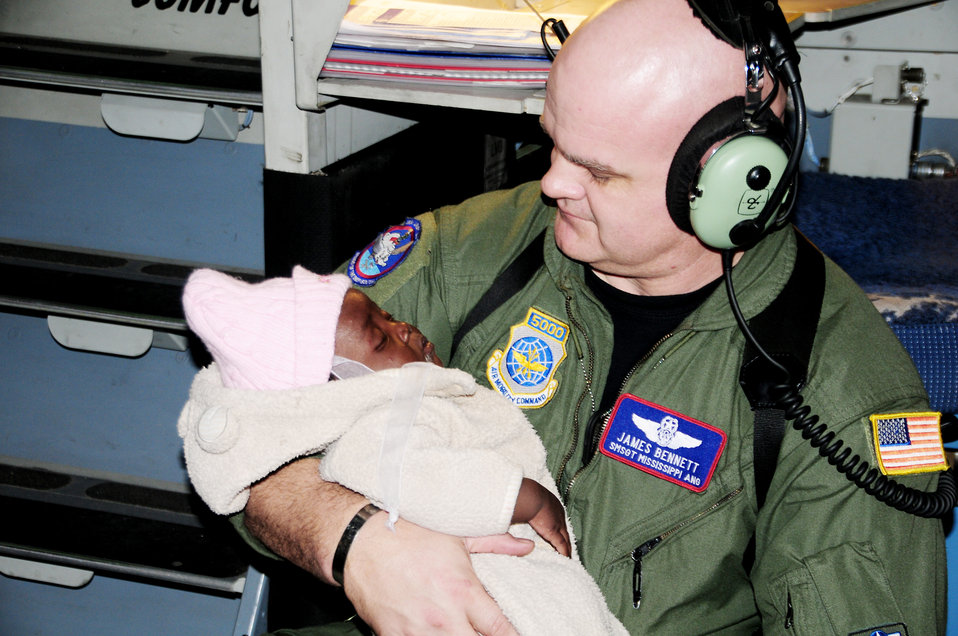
No more tears...

Senior Master Sgt. James Bennett takes a time out from his C-17 Globemaster III loadmaster duties at the airport in Port-au-Prince, Haiti, Jan. 21, 2010, to hold a crying Haitian baby for a mother who was asleep from exhaustion. Sergeant Bennett is from the Mississippi Air National Guard's 172nd Airlift Wing.